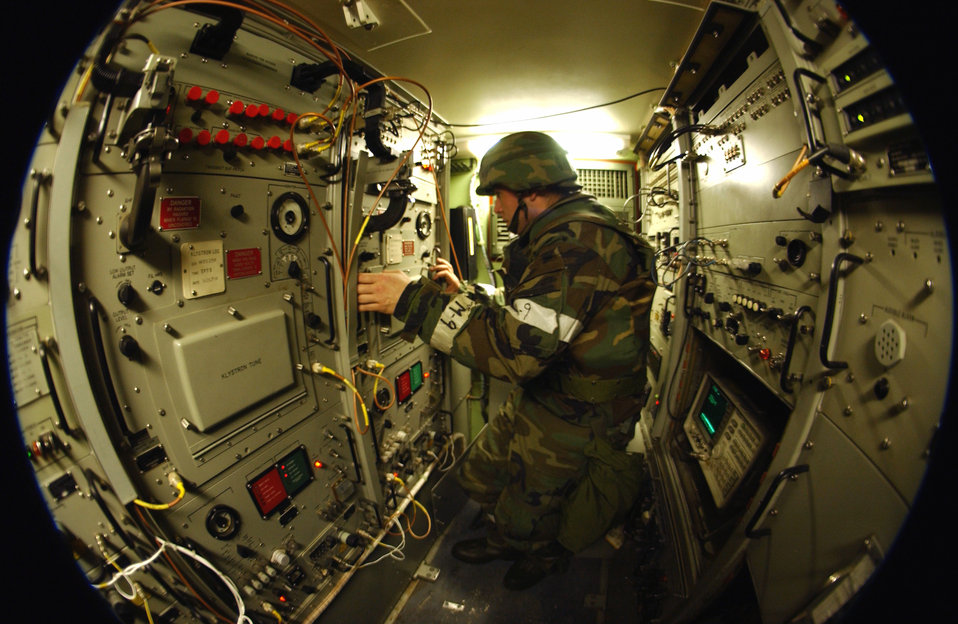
Radar scoping

EIELSON AIR FORCE BASE, Alaska -- Airman 1st Class Robert Rosa sets up a klystron amplifier in a satellite communications terminal prior to acquiring a satellite here April 13 during an operational readiness exercise. Airman Rosa is a tactical satellite communications apprentice with the 354th Communications Squadron.